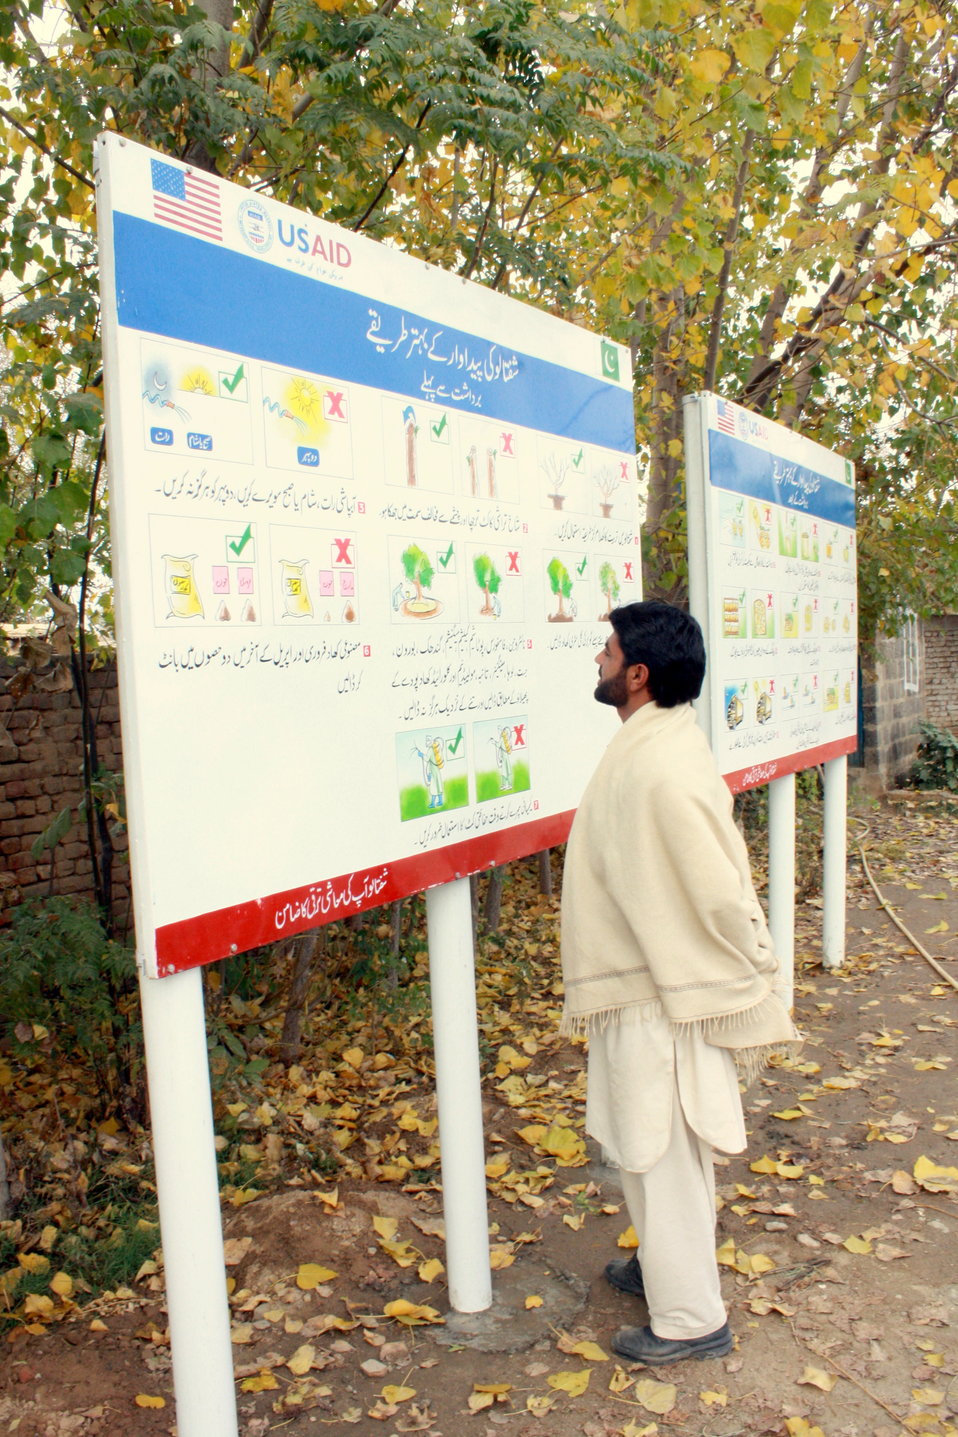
The USAID Firms Project Peach Hoardings on Best Agricultural Practices in the Peach Sector

The boards carry illustrations with supporting text for a largely uneducated target audience and others with rudimentary reading skills. These boards have received an overwhelming positive response from the various stakeholders of the peach sector.